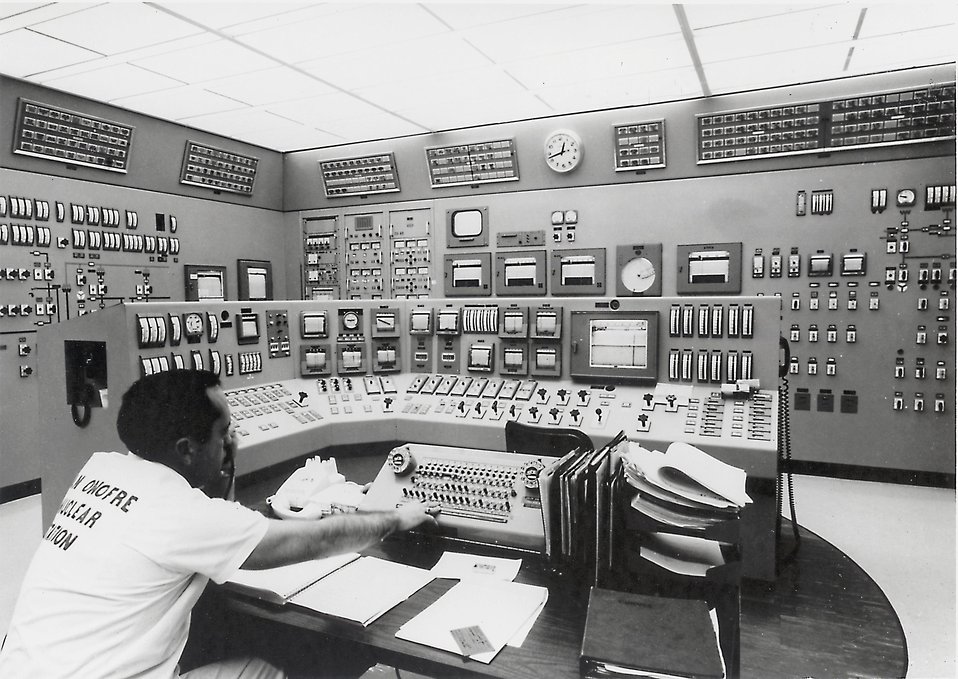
This is the highly automated Control Room of the San Onofre Nuclear Generating Station. The elaborate system of dials, gauges and colored lights notifies the operators instantaneously of any deviation from normal conditions. Circa 1968.